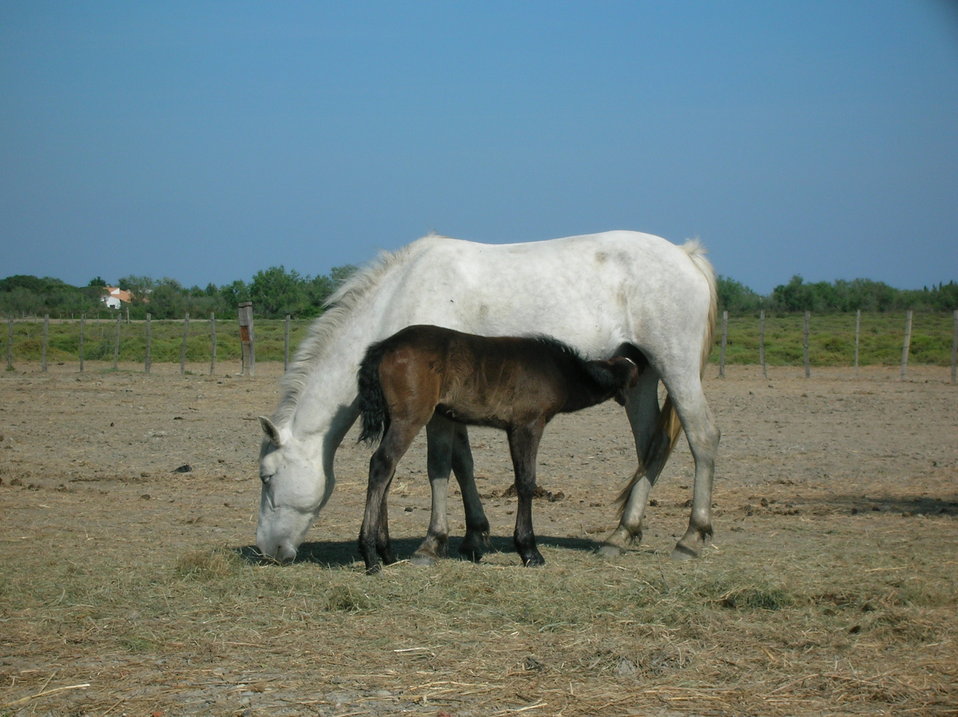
Camargue foal suckling its mother. Fran√ßais†: Poulain de Camarque s'allaitant aupr√®s de sa m√®re.